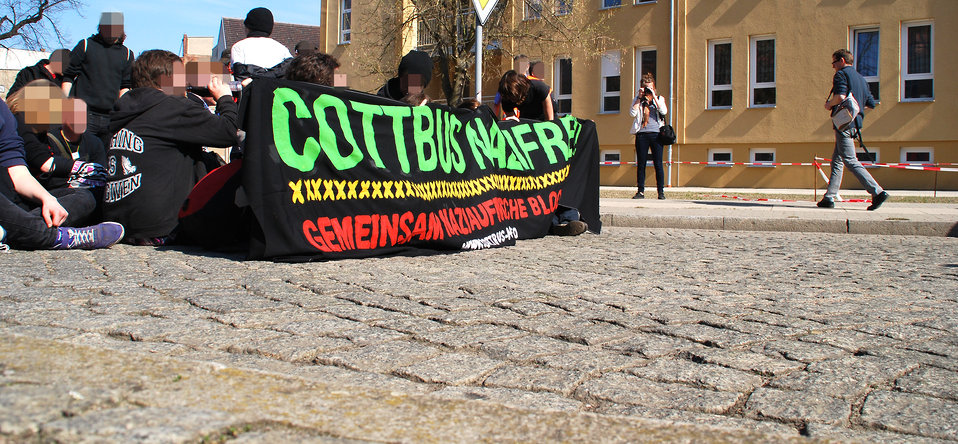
Proteste gegen den Nazi-Aufmarsch am 24.3.2012 in Frankfurt (Oder)